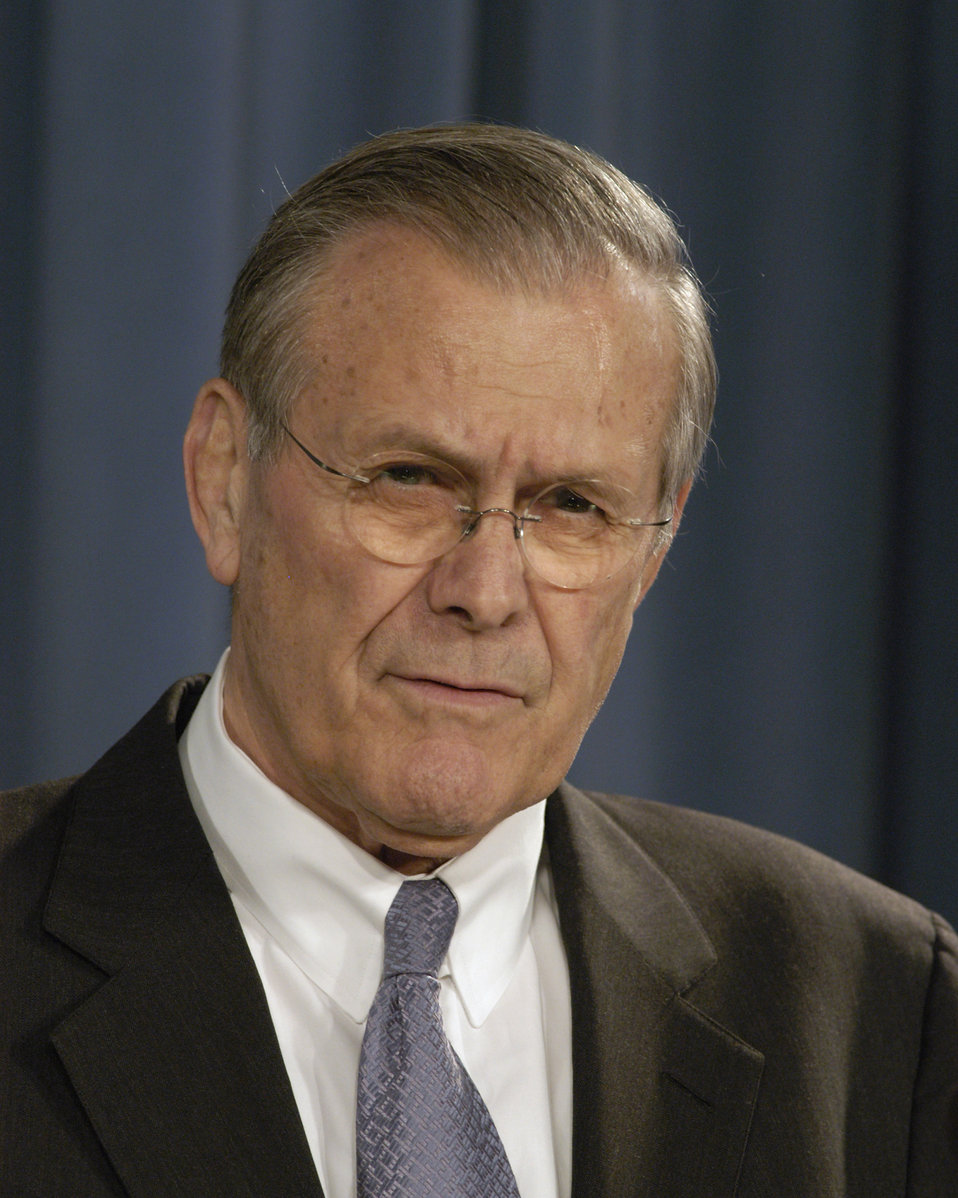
SECDEF Donald H. Rumsfeld

PENTAGON, Va. -- Secretary of Defense Donald H. Rumsfeld listens to a reporter's question during a Pentagon press briefing here Feb. 3.